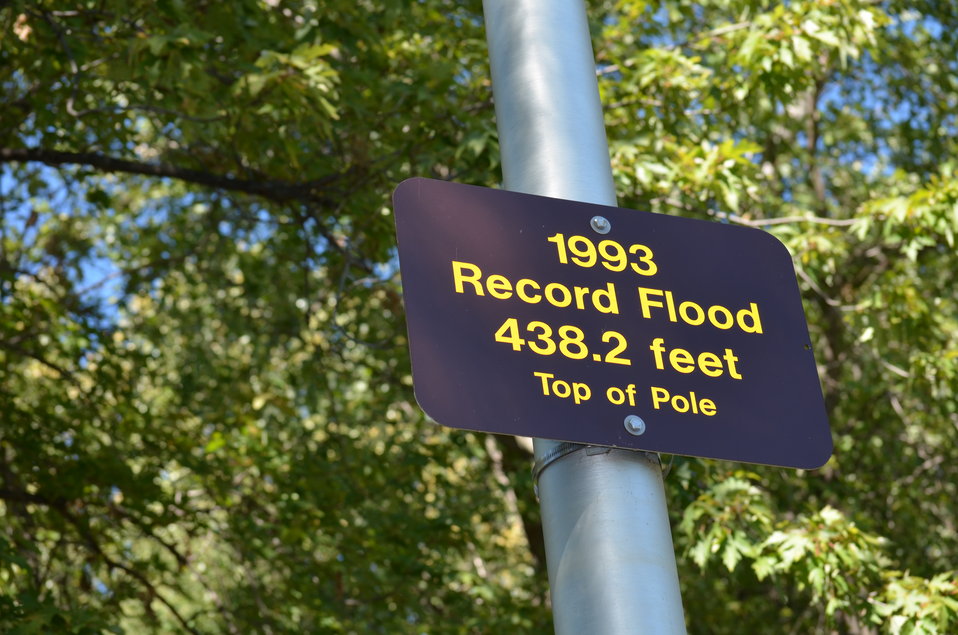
Record flooding

Record of flooding at confluence in 1993 at Edward 'Ted' and Pat Jones Confluence Point State Park. USFWS/Ashley Spratt